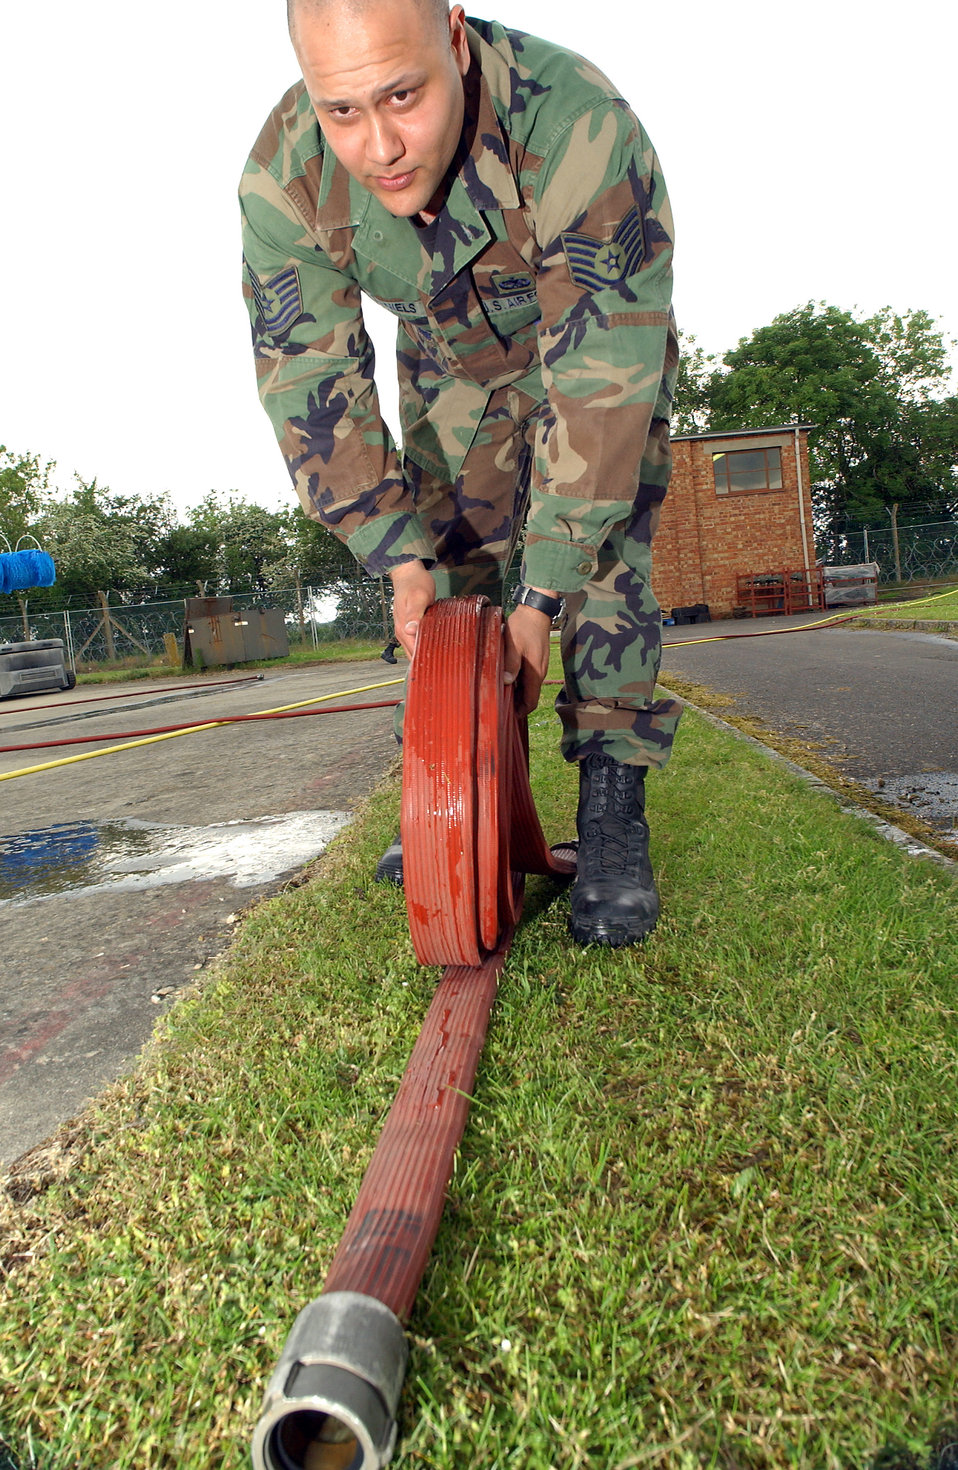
Ready for wash

ROYAL AIR FORCE FAIRFORD, England -- Tech. Sgt. Sterling Daniels rolls up a fire hose here after washing a KC-135 Stratotanker on May 20. Sergeant Daniels is a member of the 100th Maintenance Squadron at Royal Air Force Mildenhall, England.